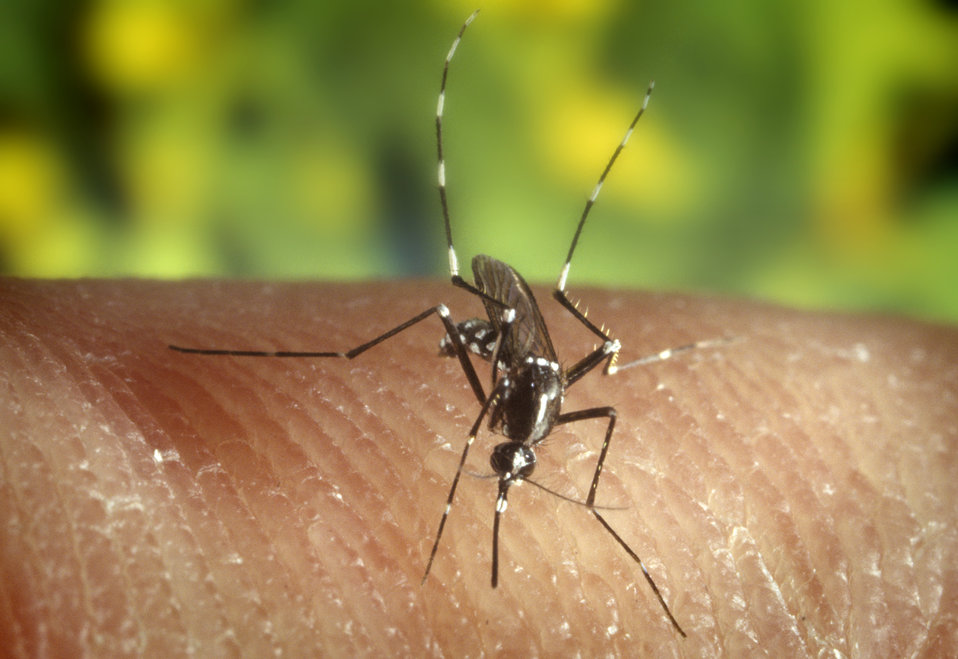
A female Aedes albopictus mosquito feeding on a human host.